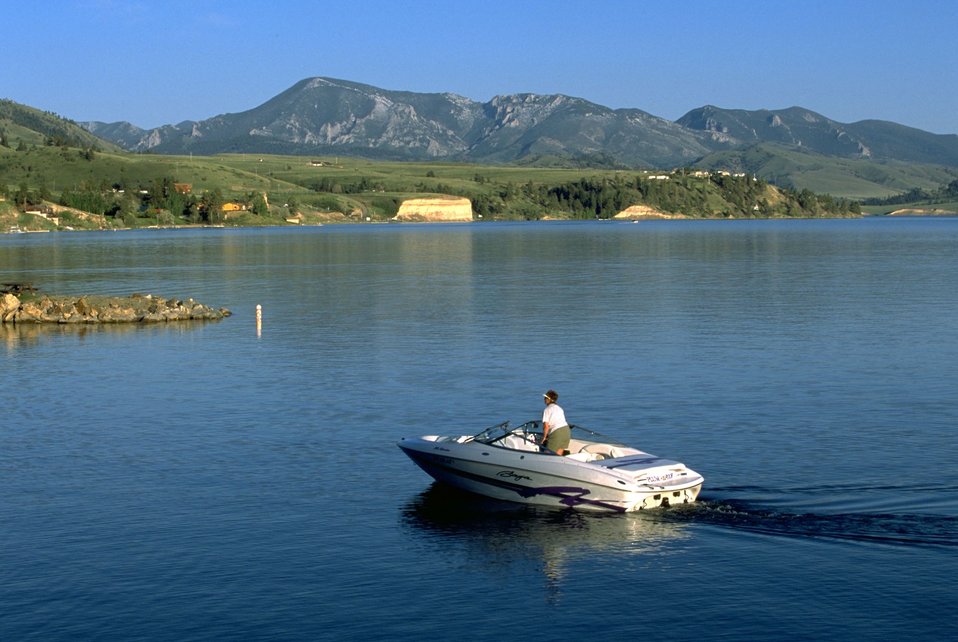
Speed boat in Holter Lake